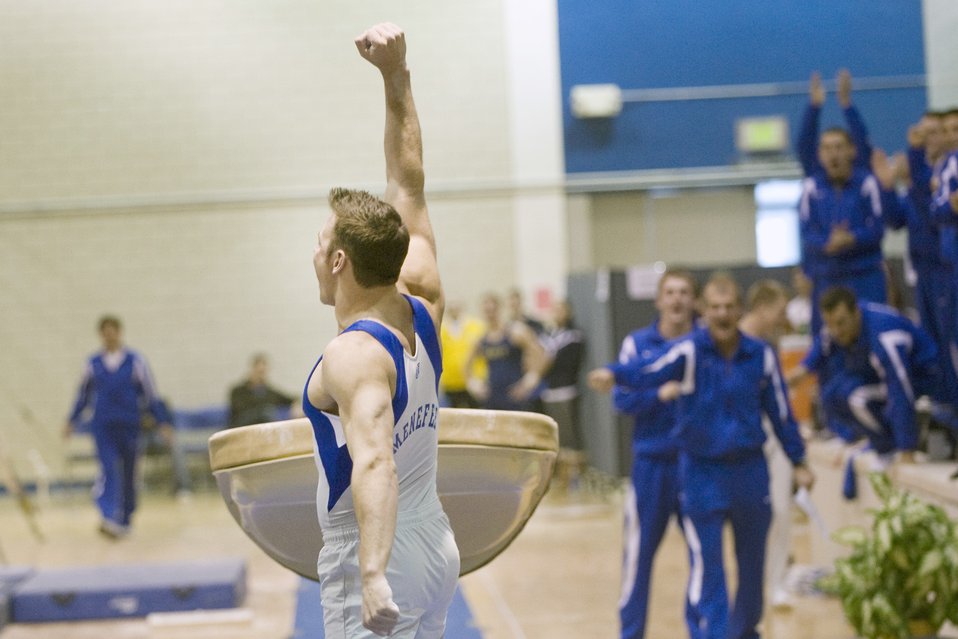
USA Gymnastics Championships

Air Force sophomore Devin Menefee celebrates after vaulting to a U.S. Air Force Academy record score of 15.950 during the USA Gymnastics Championships held at the Academy's Cadet Gym in Colorado March 27, 2010. The vault also landed him the collegiate national title.